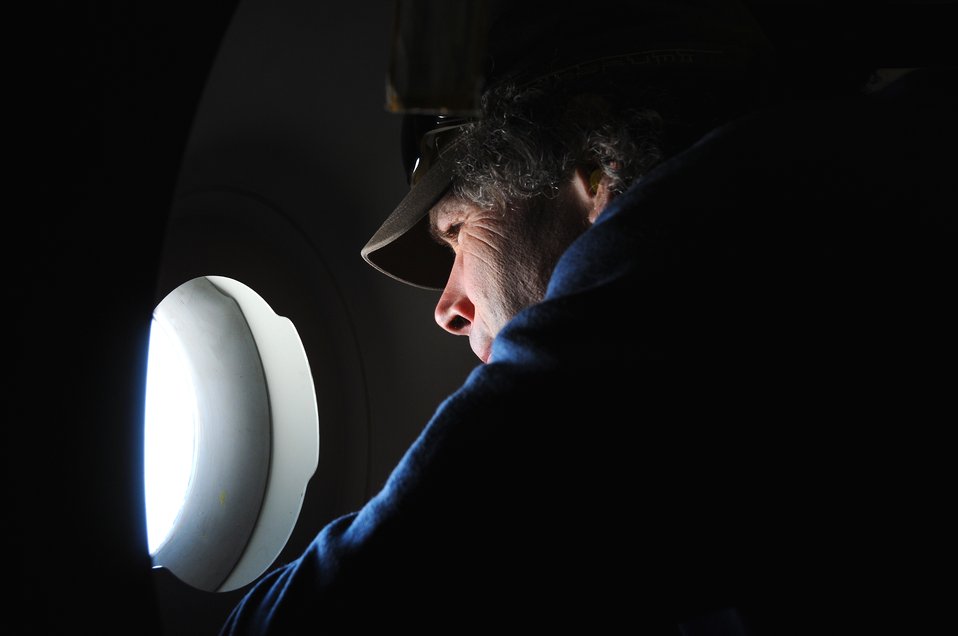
C-17s support Operation Deep Freeze

Matt Smith, an Antarctica survival training guide looks out the window of a C-17 Globemaster III Dec. 25, 2010, as it flies over the Ross Sea towards McMurdo Air Station, Antarctica. The aircraft is assigned to the Air Force Reserve Command’s 728th Airlift Squadron at McChord Air Force Base, Wash. The C-17 departed Christchurch, New Zealand, but had to turn around as bad weather made it too difficult to land in Antarctica.